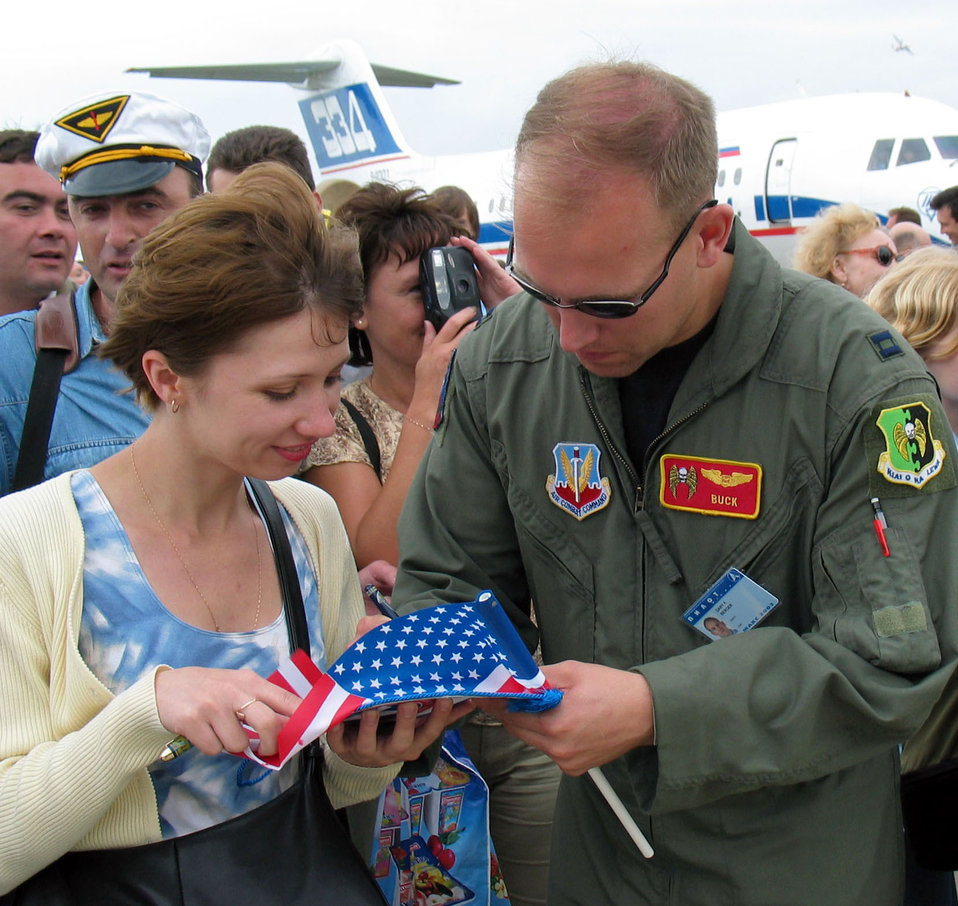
'Buff' superstar?

ZHUKOVSKY AIRFIELD, Russia -- Capt. Gary Berger signs his autograph for a Russian visitor Aug. 22 at the Moscow Aviation and Space Show. Berger is a B-52 Stratofortress crew member from Minot Air Force Base, N.D. This is the first time U.S. military aircraft have been on public display in Russia. Four other U.S. military aircraft are on display here: an F-16 Fighting Falcon, an F-15E Strike Eagle, a C-130 Hercules and a KC-135 Stratotanker. Also, an F-15 Eagle performs a daily aerial demonstration. The show ends Aug. 24.